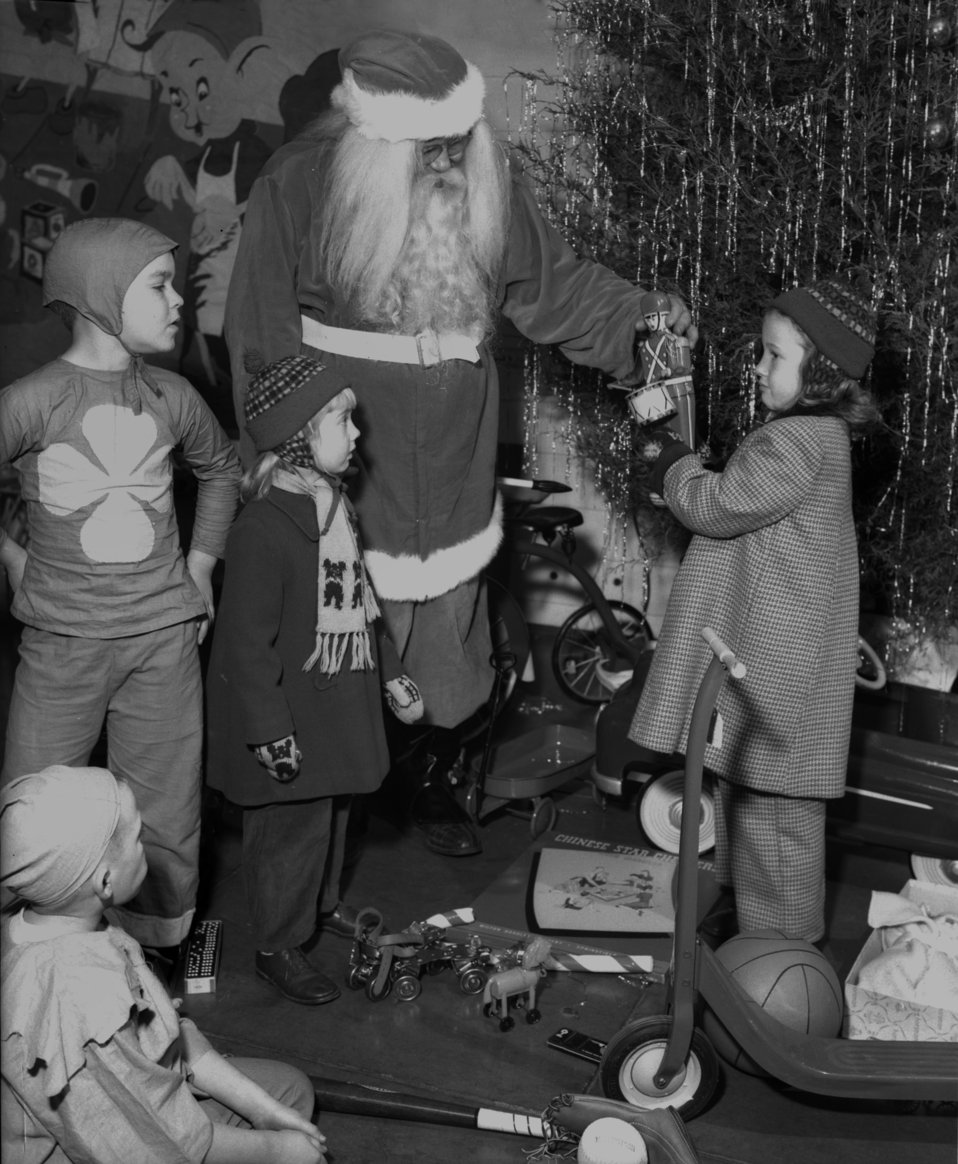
Recreation Dept. Santa Clause Oak Ridge

6371 DOE photo by Ed Westcott

Recreation Dept. Santa Clause Oak Ridge Tennessee 12/20/1950